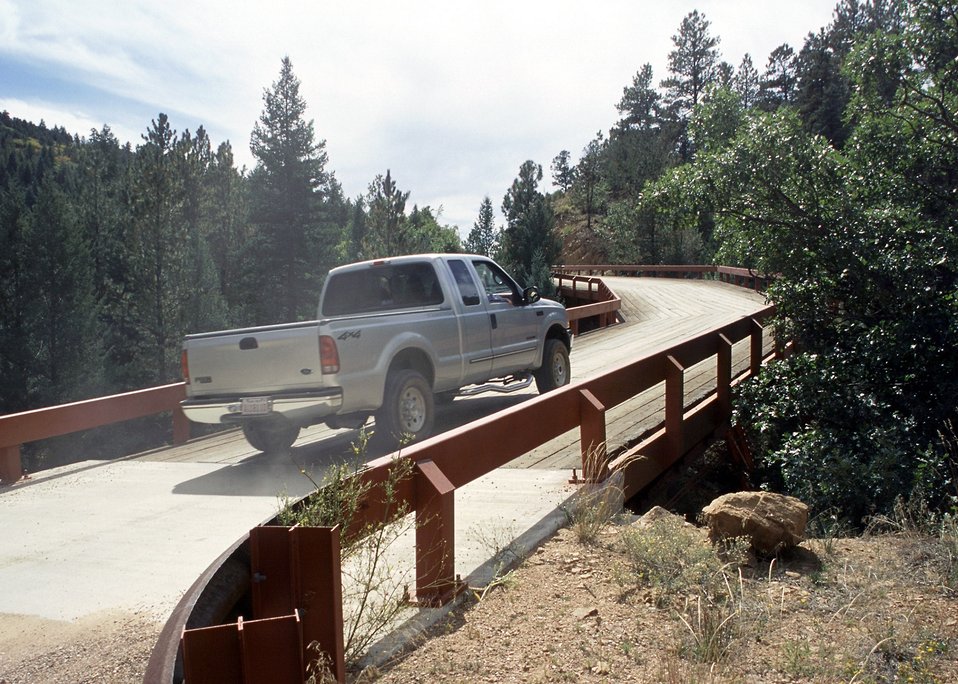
Truck on Steel Bridge